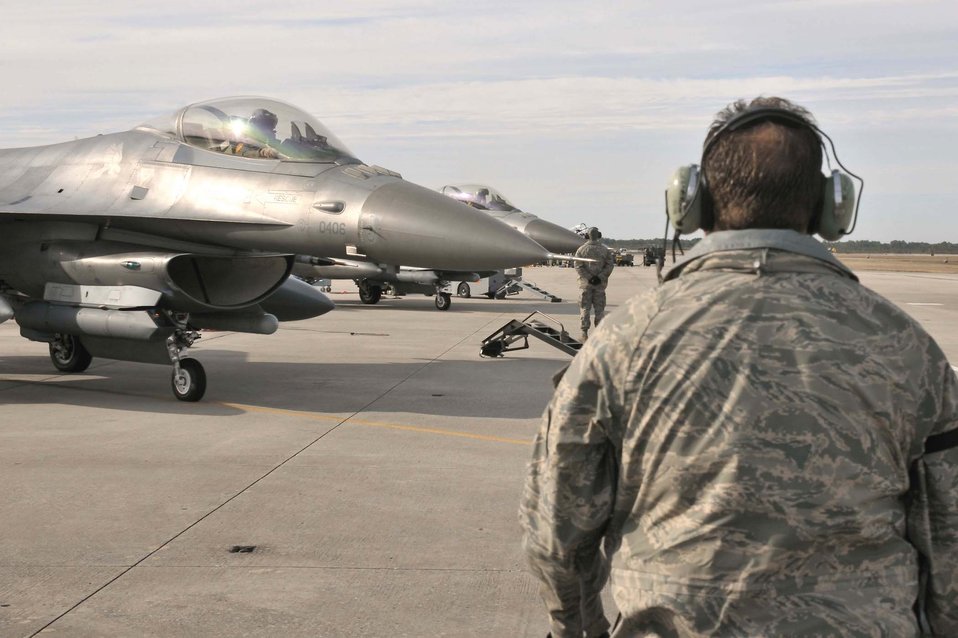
Air National Guard fighter wing preps for alert missions at Tyndall

Maintainers from the 179th Fighter Squadron, a subordinate unit of the 148th Fighter Wing out of Duluth, Minn., prepare to launch F-16s for a mission Jan. 27, 2011, at Tyndall Air Force Base, Fla. Airmen from the 148th FW are working with members of the 53rd Weapons Evaluation Group at Tyndall AFB for two weeks to train for their air sovereignty alert missions and to validate their newly-upgraded, Block 50 F-16s.